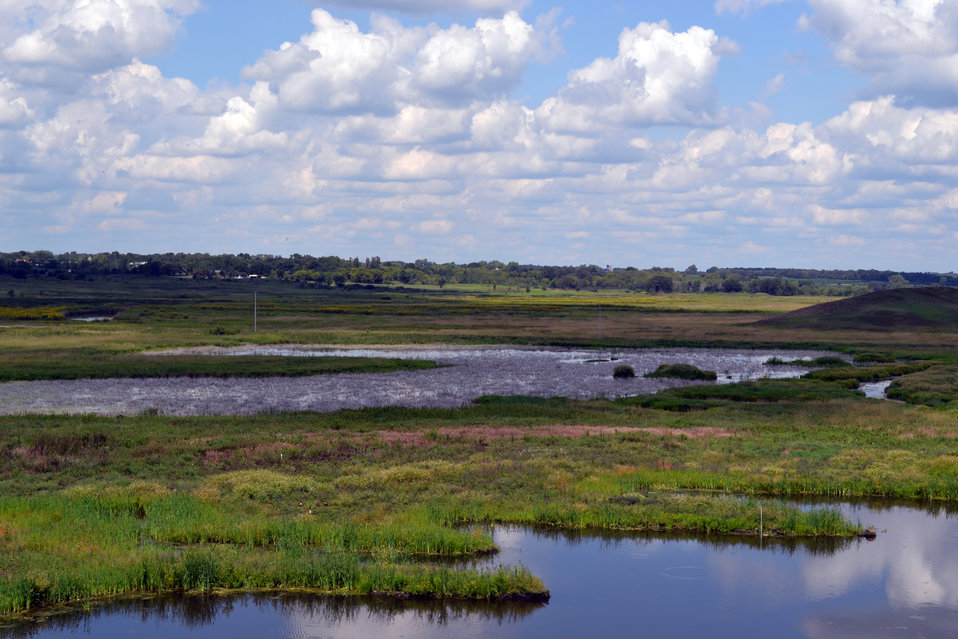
The Lost Kame Marsh

Glacial Park has long been considered one of the jewels of the county’s open space holdings, characterized by its rolling prairie, wetlands, delta kames, oak savanna and the tranquil presence of Nippersink Creek.